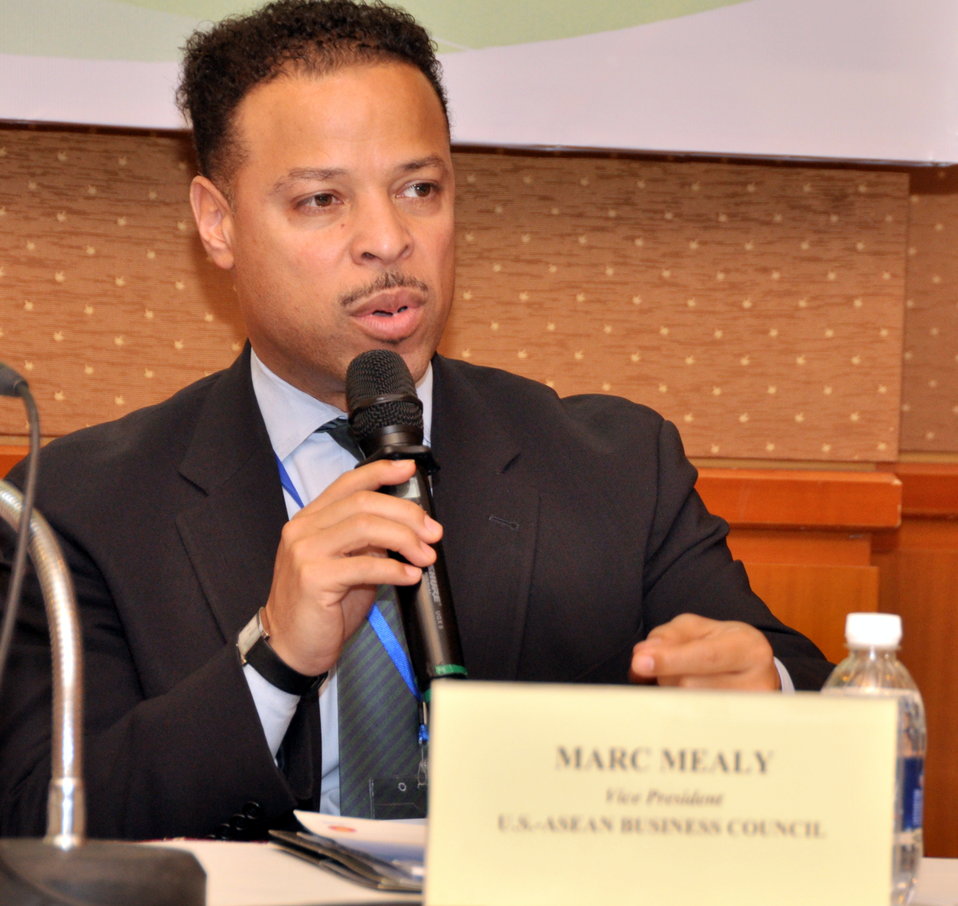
Mr. Marc Mealy, Vice President of the U.S.-ASEAN Business Council, addresses a press conference at the LMI Infrastructure Best Practices Exchange in Hanoi

January 14, 2013